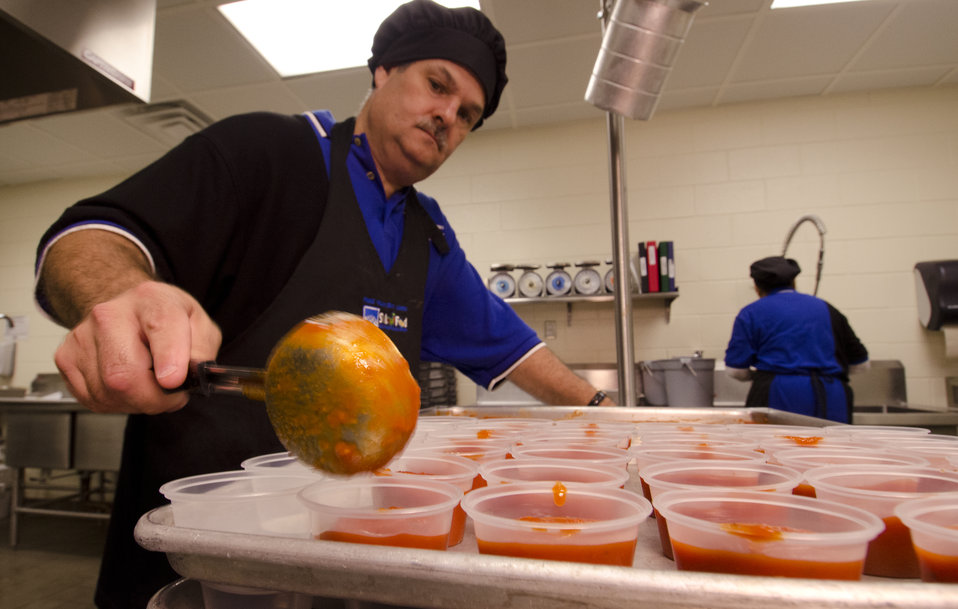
School lunch staff and students enjoy the new school lunch menu created to meet the new standards at the Yorkshire Elementary School in Manassas, VA on Friday, Sept. 7, 2012.